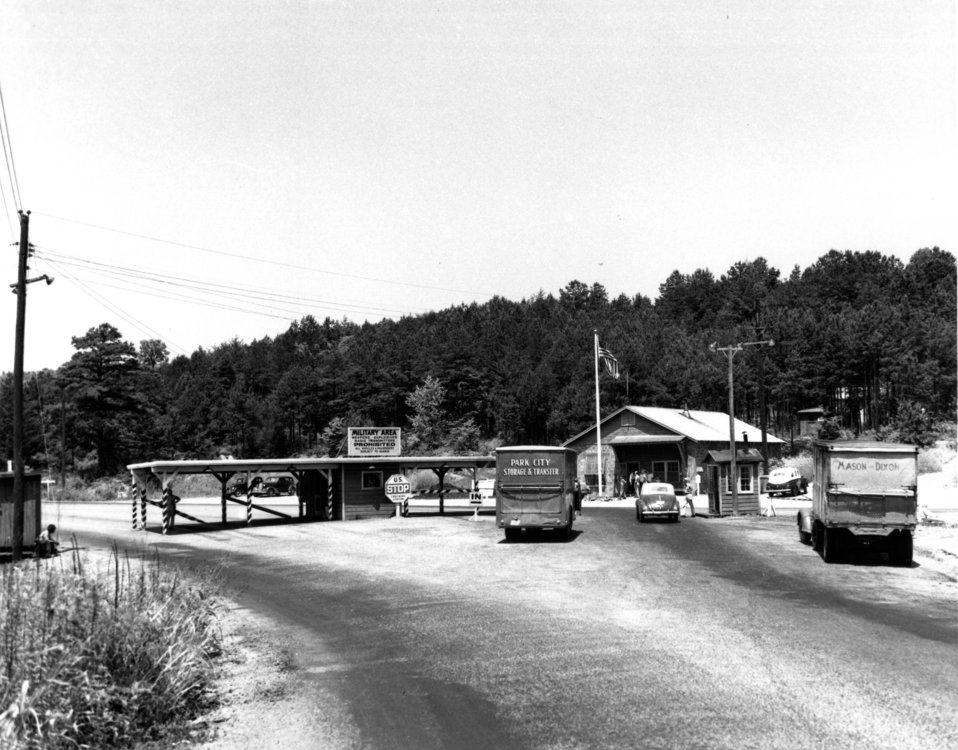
Security at Oak Ridge